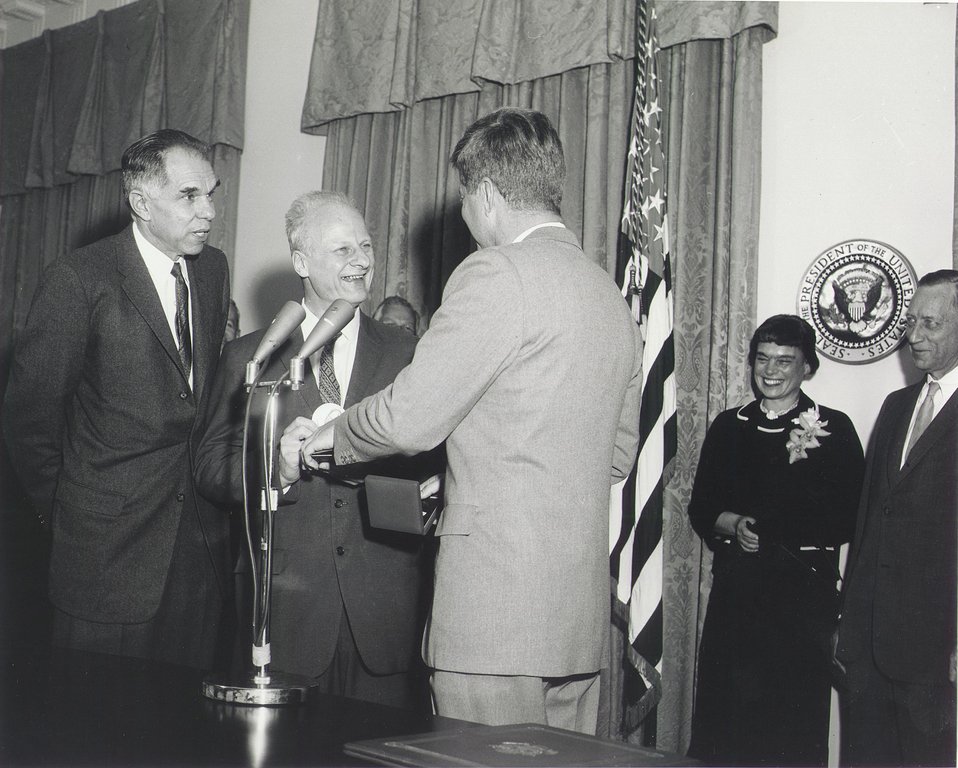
Fermi Award Ceremony for Dr. Bethe in Washington on Dec. 1, 1961.